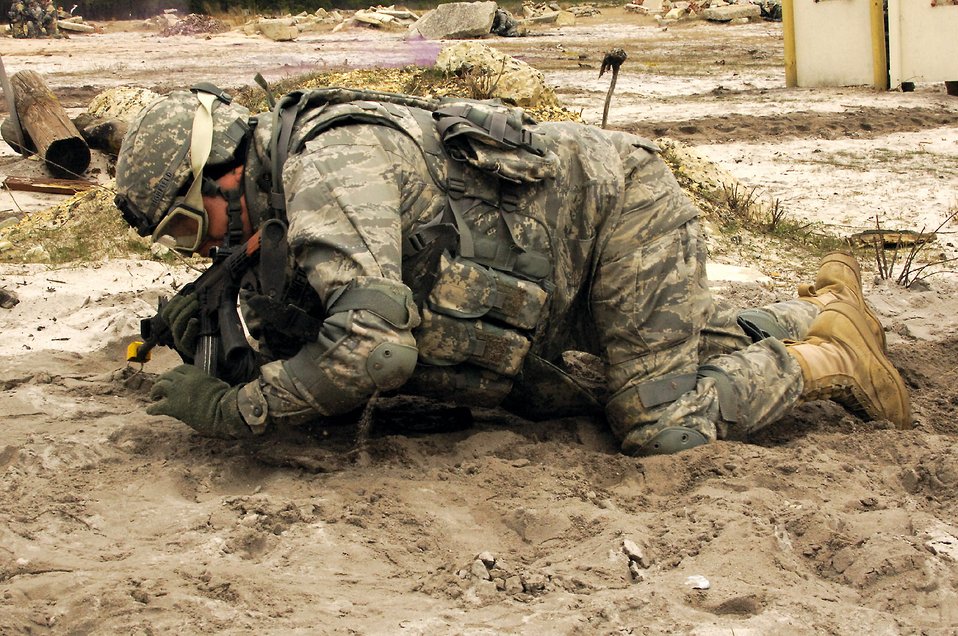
Airmen master Soldier skills training

Lt. Col. Kevin Highfield low crawls to the next point during Individual Movement Technique training at the Fort Dix, N.J., improvised explosive device range. The training teaches troops how to conduct maneuvers in an unknown, often hostile, environment. Colonel Highfield and his fellow Airmen, members of USAF Class 25, are completing the Soldier Skills Training Course as they prepare for various deployments around the globe. There are about 75 Airmen currently going through the month-long course.